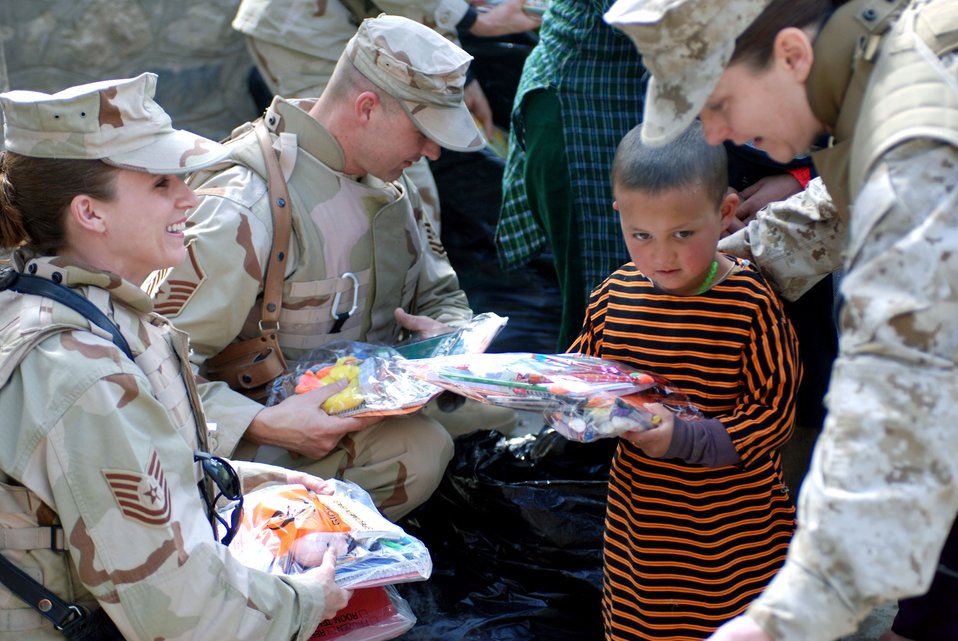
Afghan children get geared up for school

Tech. Sgt. Shelly Ward (from left), Master Sgt. Shane Enos and Marine Maj. Shawn Haney distribute school supplies to children March 8 at a school in downtown Kabul, Afghanistan. The team from the Combined Security Transition Command were part of a volunteer community relations event.